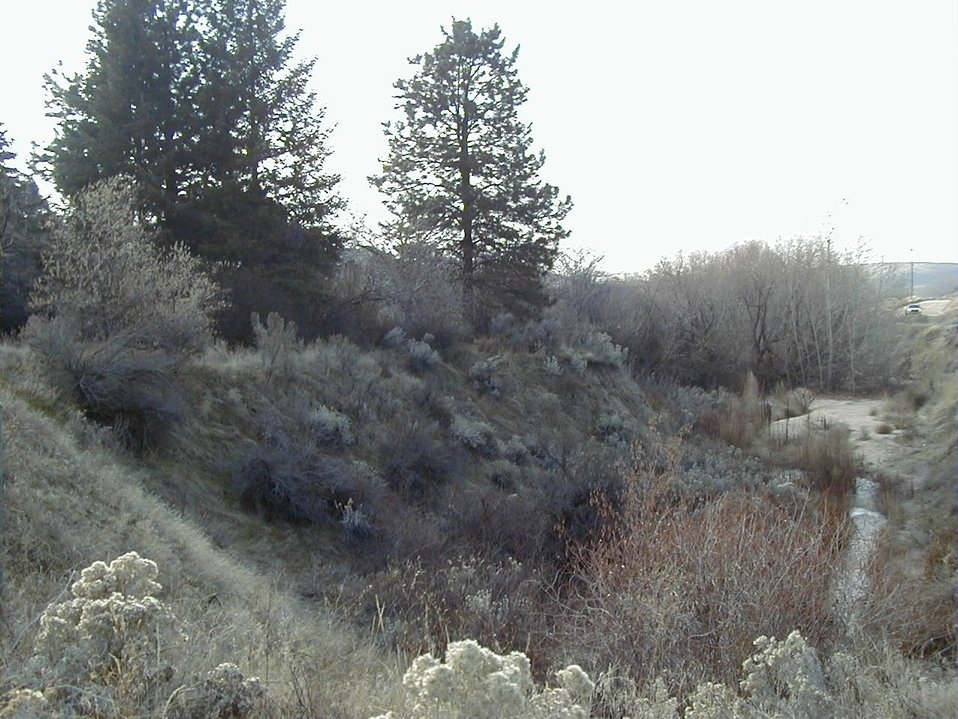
Environmental Education McCord house Boise Front Foothills Fire Safety and Urban interface Four Rivers Field Office LSRD Lower Snake River District